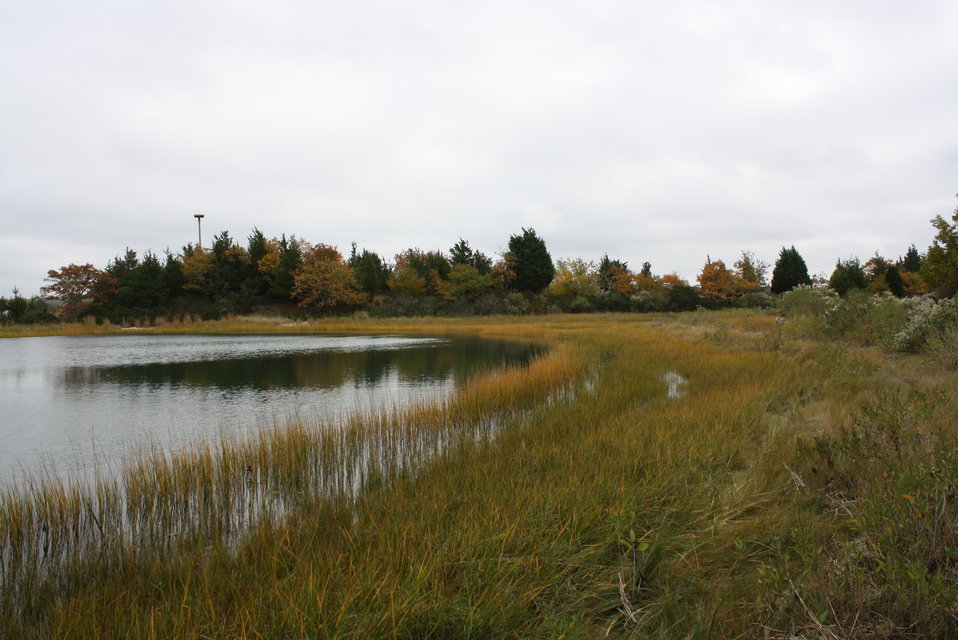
Salt marsh

A salt marsh at Conscience Point National Wildlife Refuge.